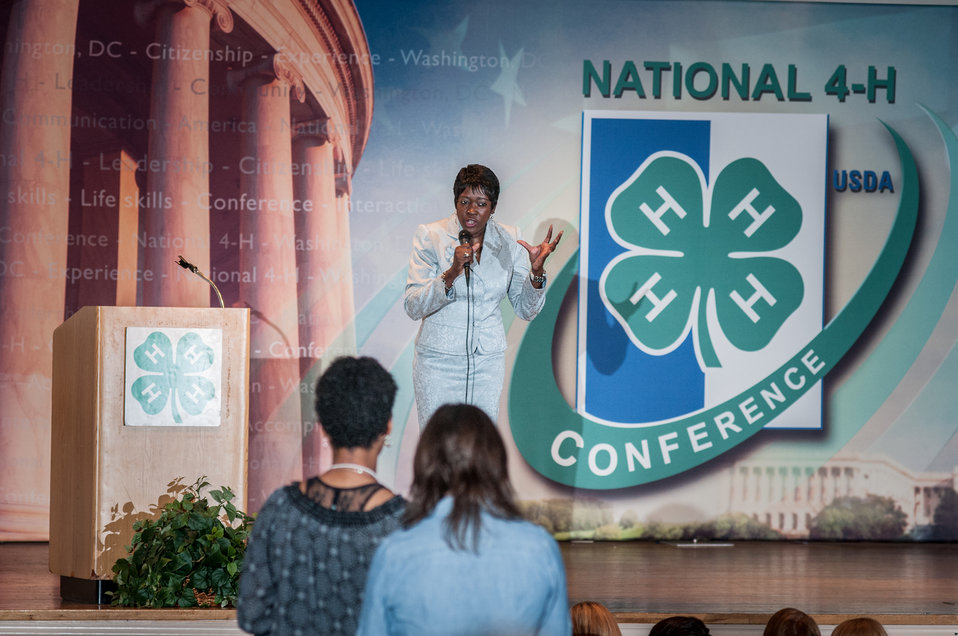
U.S. Department of Agriculture (USDA) Departmental Management Office of Advocacy and Outreach Director Carolyn Parker provided opening remarks to approximately 300 youth members, Extension Educators and 4-H Adult Volunteers from across the nation, as well as U.S. Territories at the 2013 National 4-H Conference, on Monday, April 8, 2013 in Chevy Chase, MD. National Institute of Food and Agriculture Director Dr. Sonny Ramaswamy provide additional remarks and Secretary Tom Vilsack will deliver the keynote address. The youth delegates are in grades 10-12 (15-19 years old). The purpose of the conference is to 1) engage 4-H youth in personal development experiences that will increase knowledge, resources, and skills; 2) discuss topics affecting youth and 4-H programming nationwide; and 3) empower and mobilize 4-H youth to create positive social change in their communities in a meaningful and genuine way. The conference also reinforces the rich history of 4-H and its valuable tie to USDA, Cooperative Extension and the Land-Grant University System.